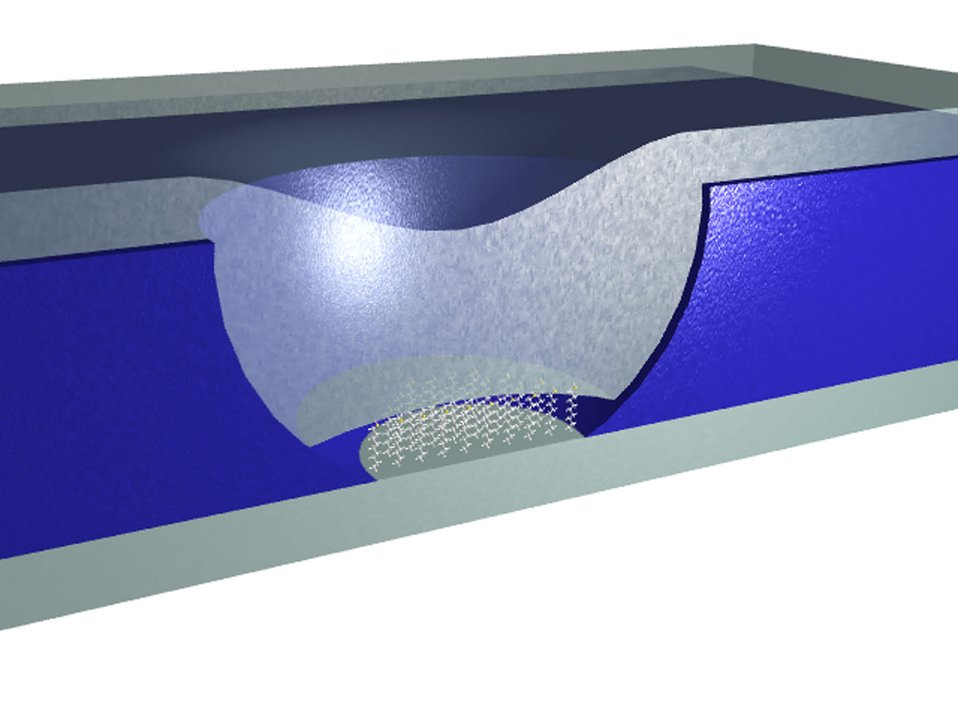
Molecular Spintronic Action Confirmed in Nanostructure

NIST researchers made the first confirmed 'spintronic' device incorporating organic molecules using a nanoscale pore test structure, which consisted of self-assembled molecules (shown in white within the middle blue layer in the illustration) sandwiched between nickel and cobalt electrodes (gray top and bottom layers). The pore structure, less than 40 nanometers in diameter, confines the molecules to a very small area, thus enabling good molecule-metal contacts and limiting defects.